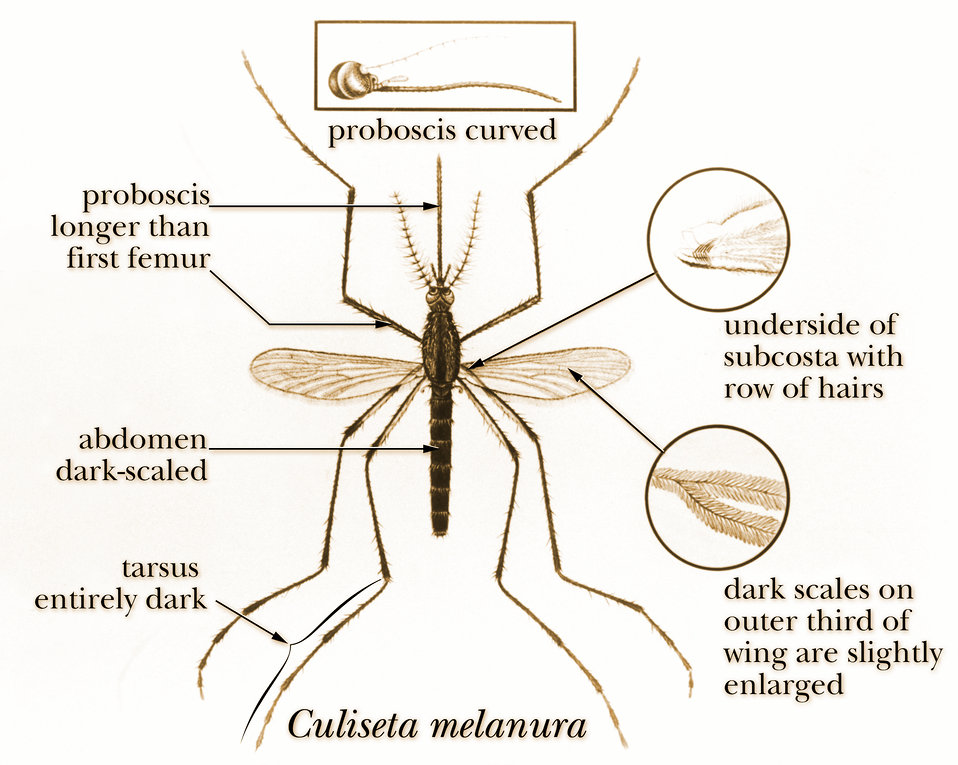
An illustration of a Culiseta melanura mosquito.